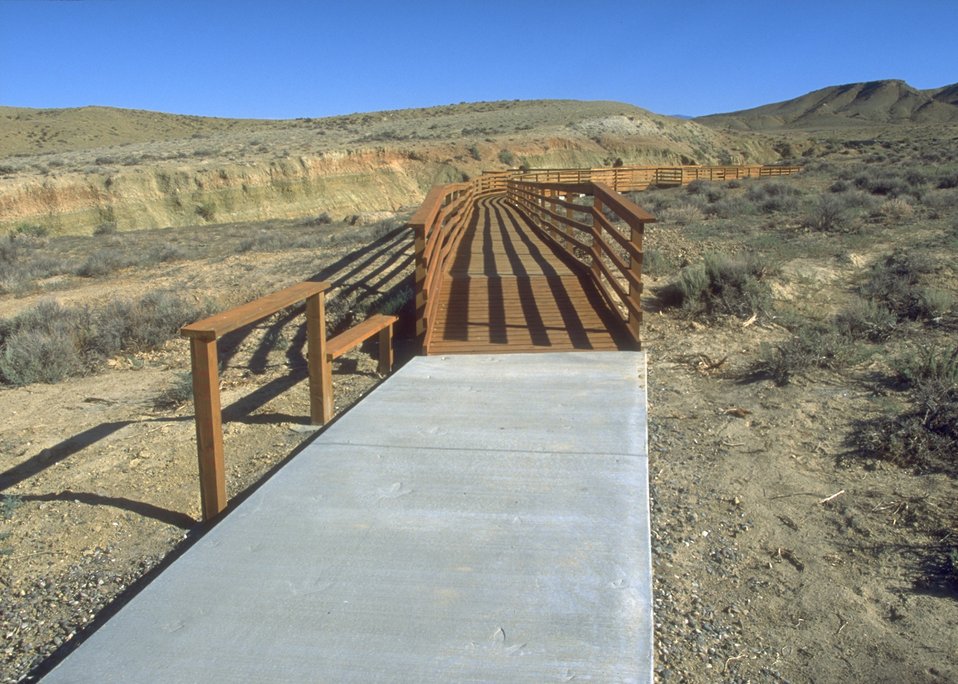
Red Gulch Dinosaur Tracksite showing some of the developed facilities, along Red Gulch/Alkali Back Country Byway, Worland Field Office.